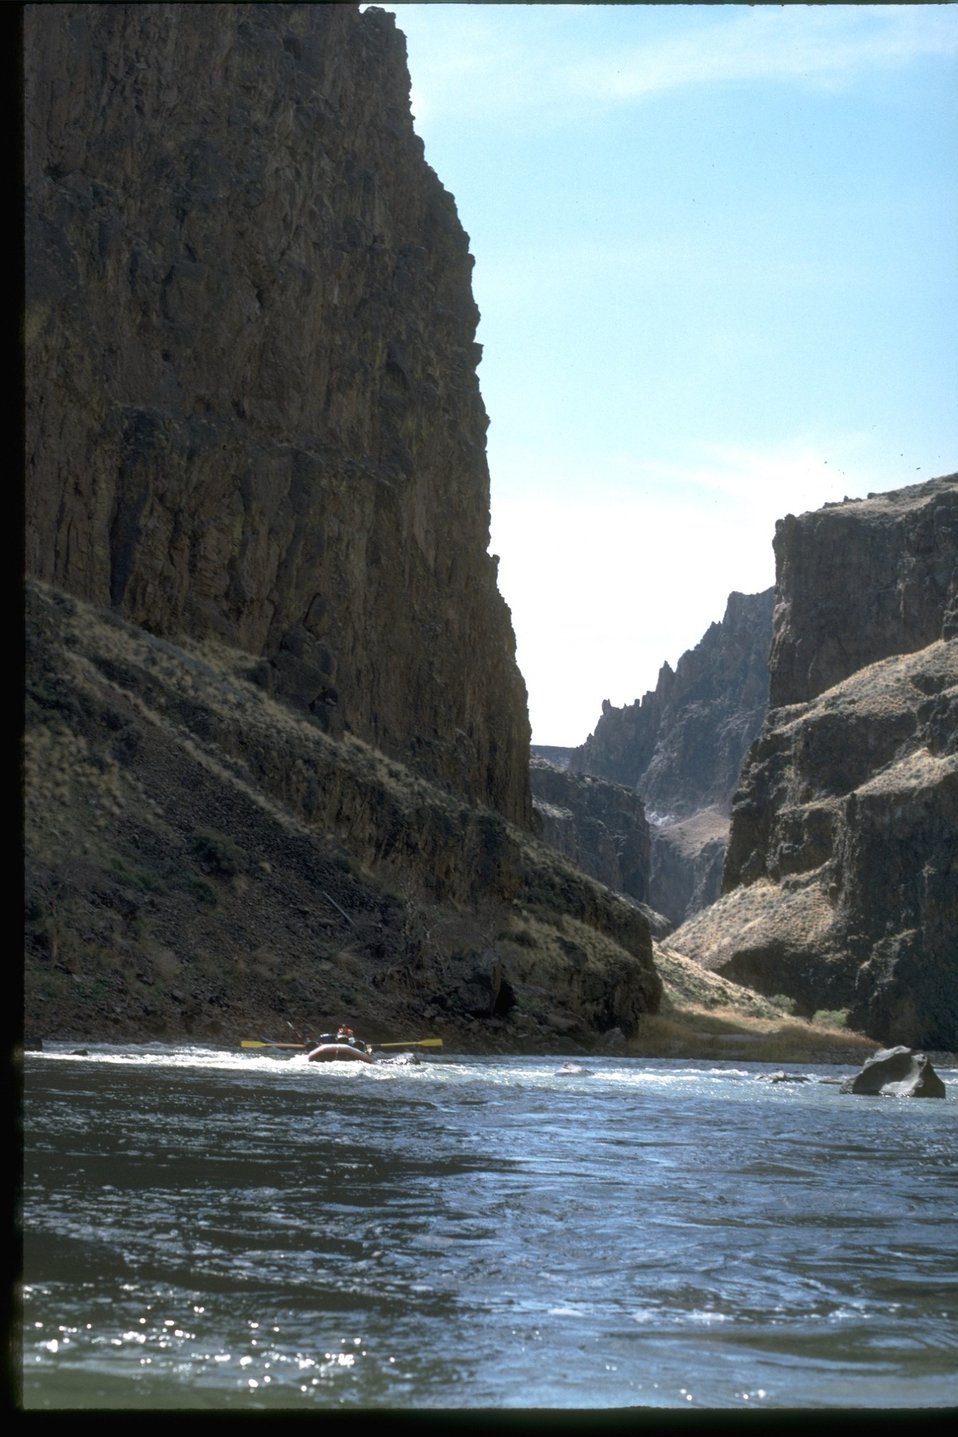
Owyhee River Oregon below the Montgomery Rapid. 3-110